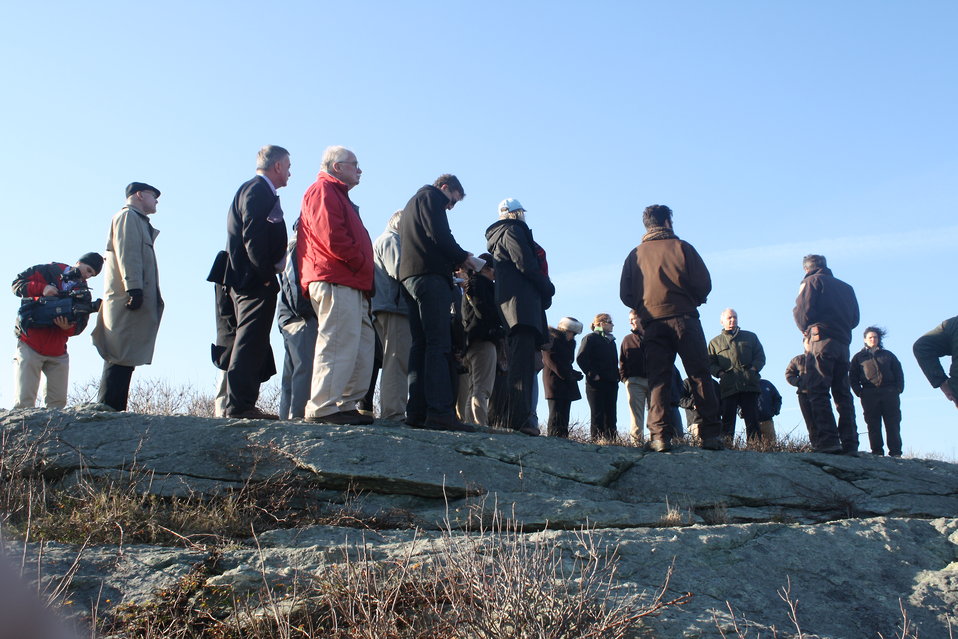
Viewing damage at Sachuest Point (RI)

U.S. Fish and Wildlife Service Director Dan Ashe joined Senator Jack Reed of Rhode Island, along with state agencies and local leaders to view damage sustained from Hurricane Sandy at Sachuest Point National Wildlife Refuge. The group gathers at the peak of the new Price Neck Overlook trail. While conducting damage assessments after Hurricane Sandy, refuge staff had to re-route the trail due to dangerous drop-offs that formed after the storm.